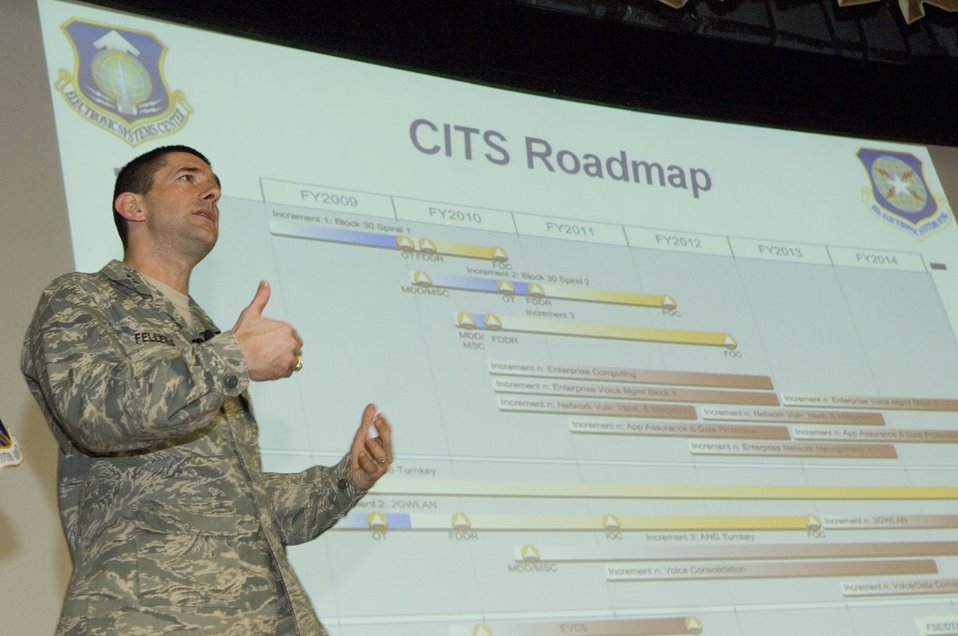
CITS key to Air Force cyber superiority goal

Col. Russ Fellers, program manager for the Air Force?s Combat Information Transport System, provides a roadmap for the multi-faceted program to attendees at a recent CITS Industry Day at Hanscom Air Force Base, Mass.